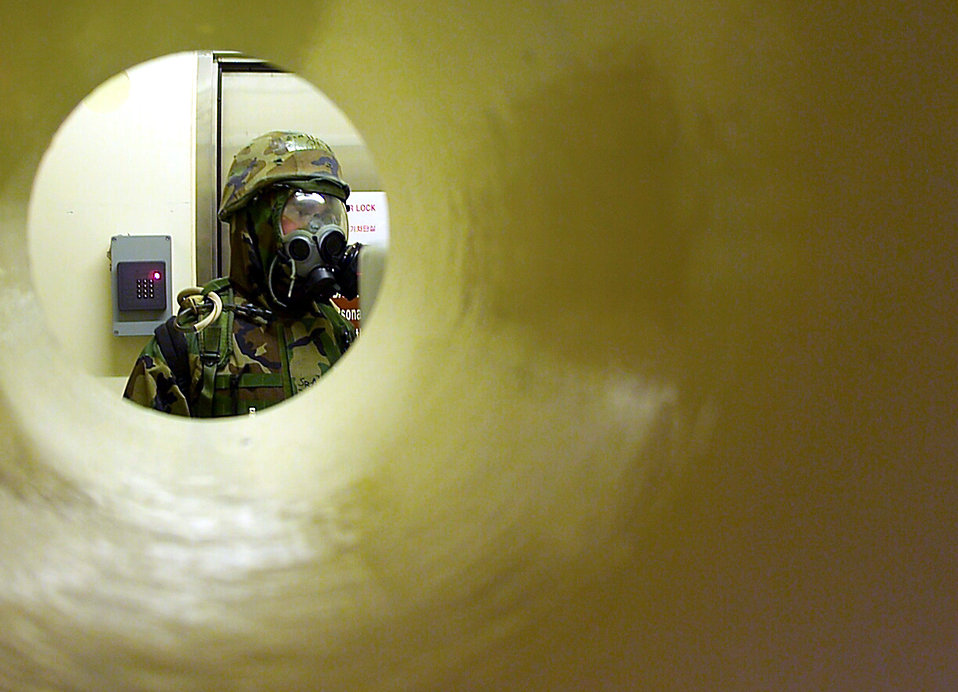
MOPP man

OSAN AIR BASE, South Korea -- Senior Airman Paul Sanders guards the entry control point at the command post dressed in mission-oriented protective posture gear during exercise Beverly Bulldog 01-04 here March 24. Airman Sanders is a security forces member with the 51st Security Forces Squadron.